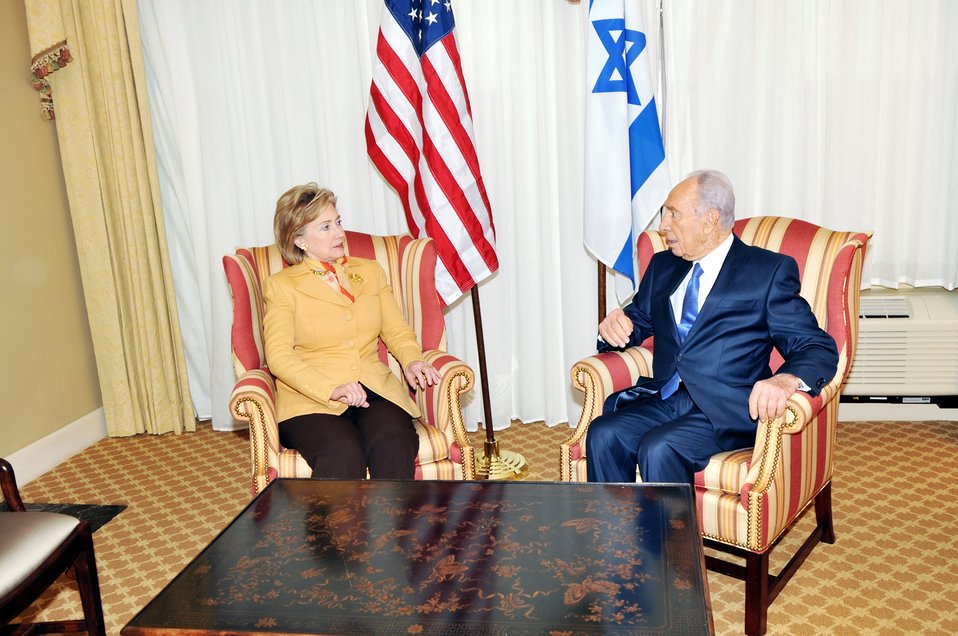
Secretary Clinton Meets With Israeli President

U.S. Secretary of State Hillary Rodham Clinton attends a bilateral meeting with President Shimon Perez of Israel at the Omni Shoreham Hotel in Washington, DC May 5, 2009.